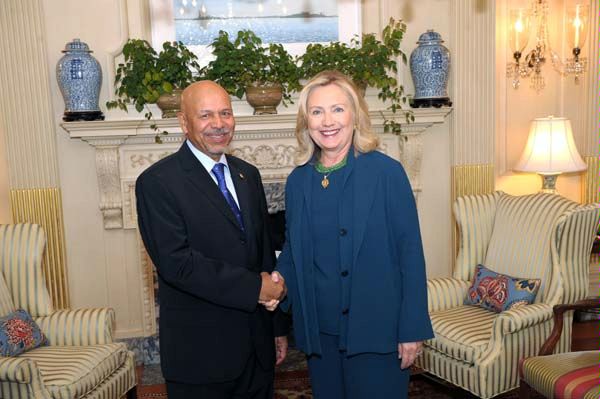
Secretary Clinton Meets With Newly Credentialed Libyan Ambassador Aujali

U.S. Secretary of State Hillary Rodham Clinton meets with newly credentialed Libyan Ambassador Aujali at the U.S. Department of State in Washington, D.C., on September 8, 2011.